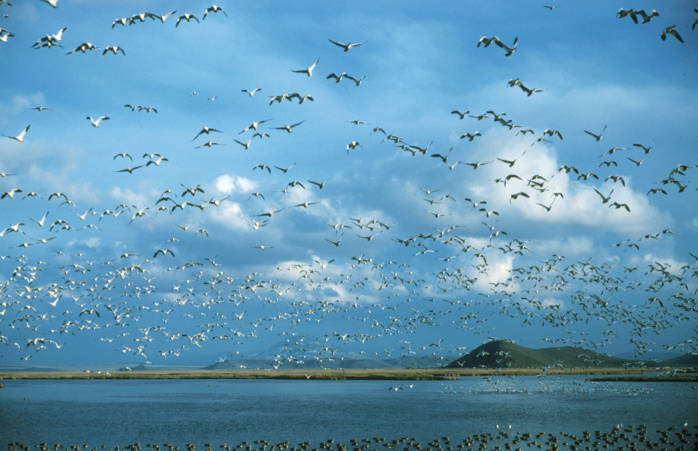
Lower Klamath National Wildlife Refuge